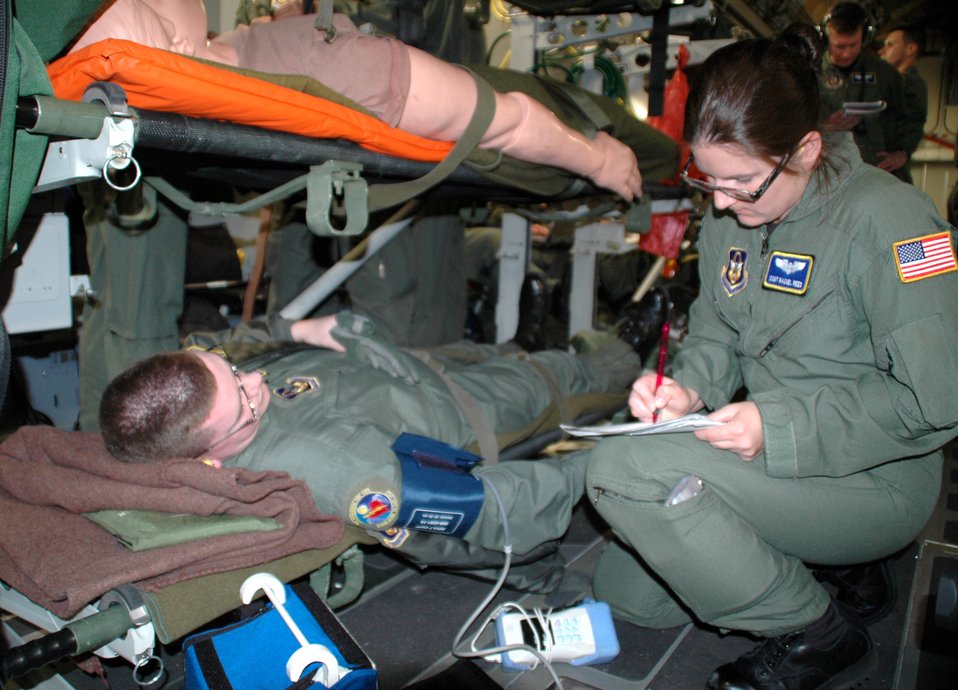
Air Force air evac crews adapt, train onboard mix of planes

Aeromedical technician Staff Sgt. Rachel Reed checks on a simulated patient, Tech. Sgt. Joseph Drake, in flight on a C-17 Globemaster III while the medical crew is put to the test with a variety of scenarios by medical flight instructors. Five squadrons and about 80 medical personnel from California, Florida, Maryland and Georgia participated in the Air Force Reserve Aeromedical Evacuation Jamboree held April 28 and 29 at Wright-Patterson Air Force Base, Ohio. Both sergeants are from the 445th Aeromedical Evacuation Squadron.